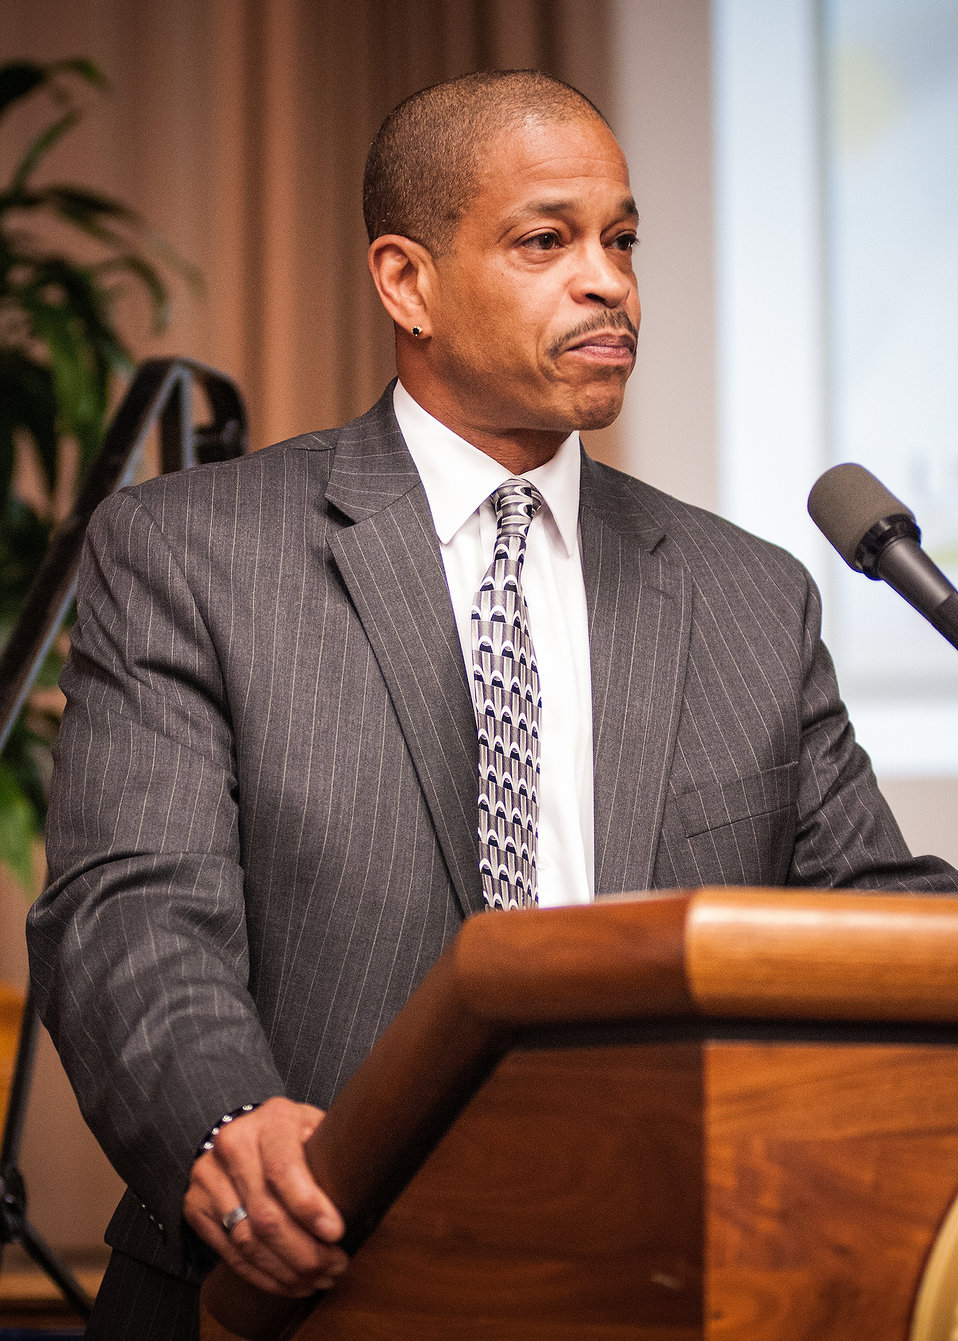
U.S. Department of Agriculture (USDA) Office of Human Resources Management (OHRM) Chief Human Capital Officer William P. Milton, Jr. welcomes and introduces speakers at the First Annual All Hands Special Emphasis Program Managers (SEPM) Meeting at the U.S. Department of Agriculture Jefferson Auditorium in Washington, D.C. on Wednesday, Mar. 13, 2013.